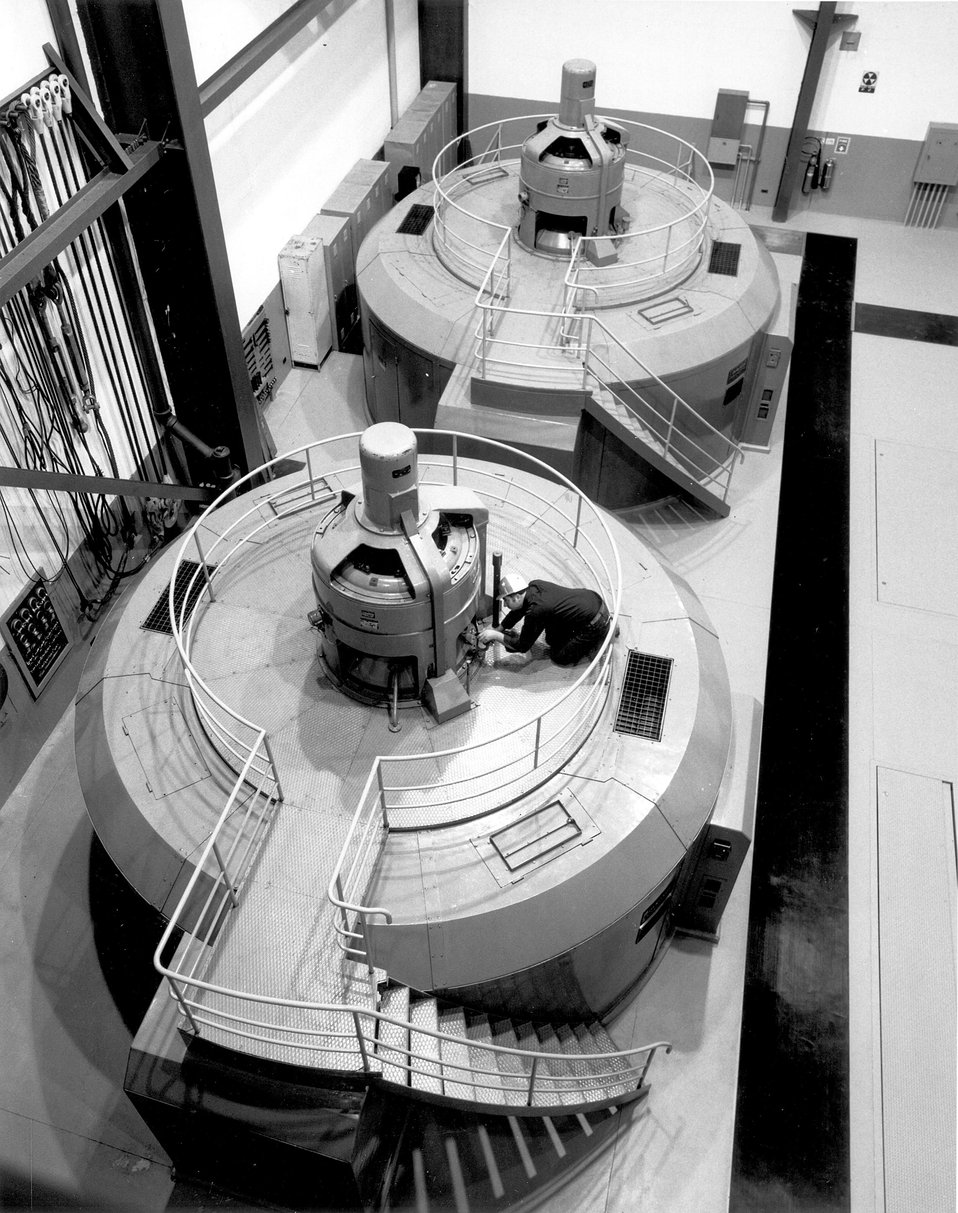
Main generator deck inside the Eklutna Powerplant. c. undated